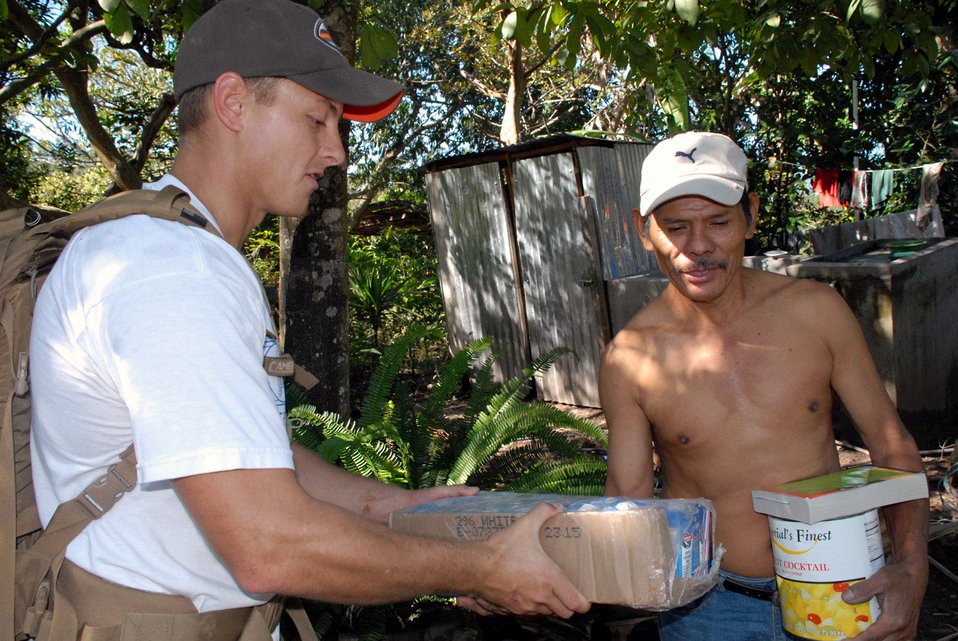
Celebrating Thanksgiving in a whole new way

1st Lt. Timothy Brodman delivers food to a local Honduran man Nov. 17 in La Sampedrana, Honduras. Airman, Soldiers and Sailors from Joint Task Force-Bravo at Soto Cano Air Base, Honduras, hiked 5 and a half miles up a mountain to deliver more than 600 pounds of food to local villagers. The hike allowed servicemembers to celebrate Thanksgiving with those less fortunate.